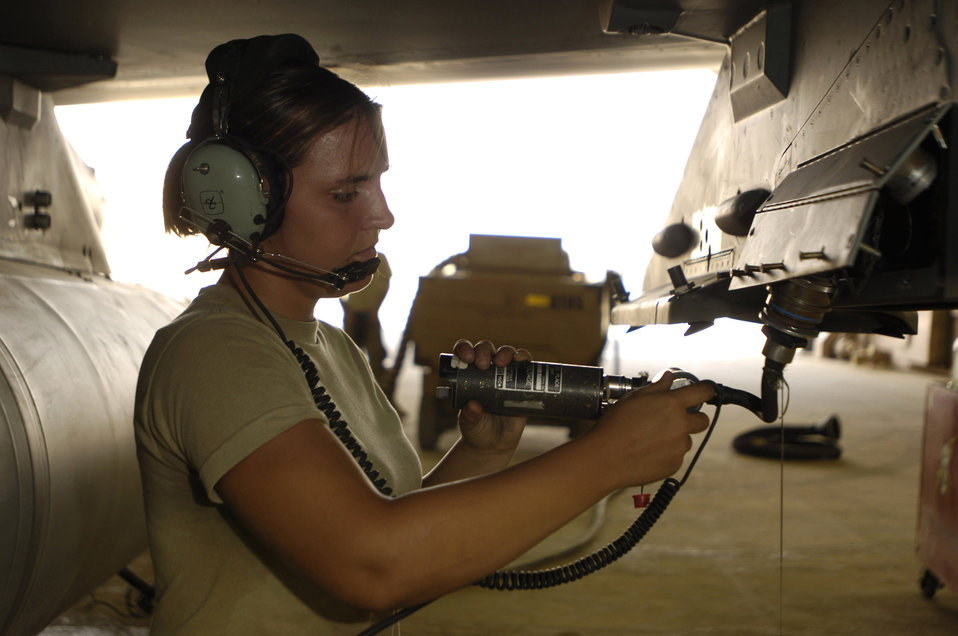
Bombs away

Senior Airman Kimberly Bickford performs a pre-load check July 28 on an F-16 Fighting Falcon at Joint Base Balad, Iraq, to ensure the cable that releases the bomb is operational.